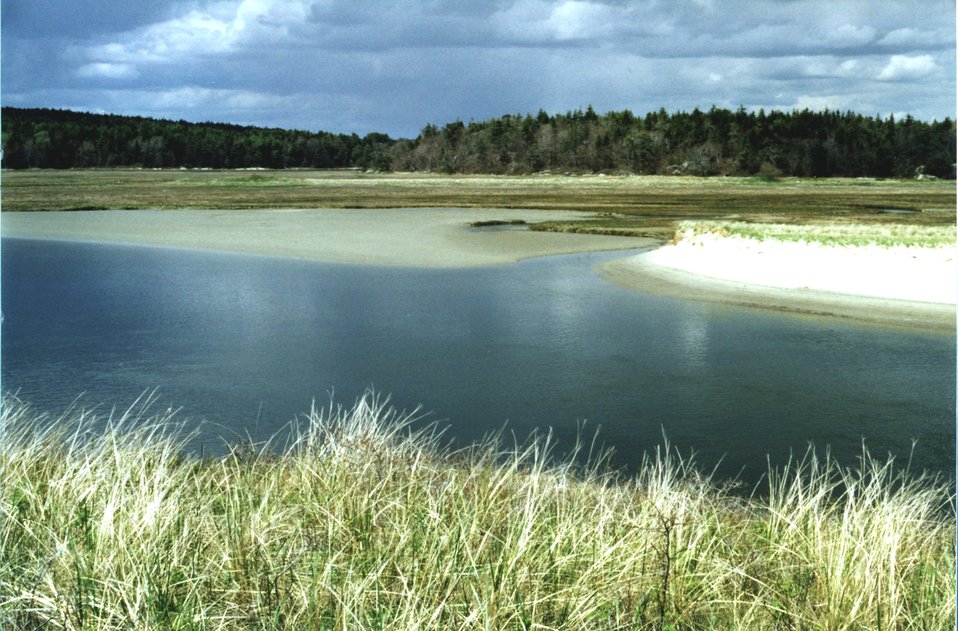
Morse River Inlet showing tidal marsh showing prograding of the barrier spit.